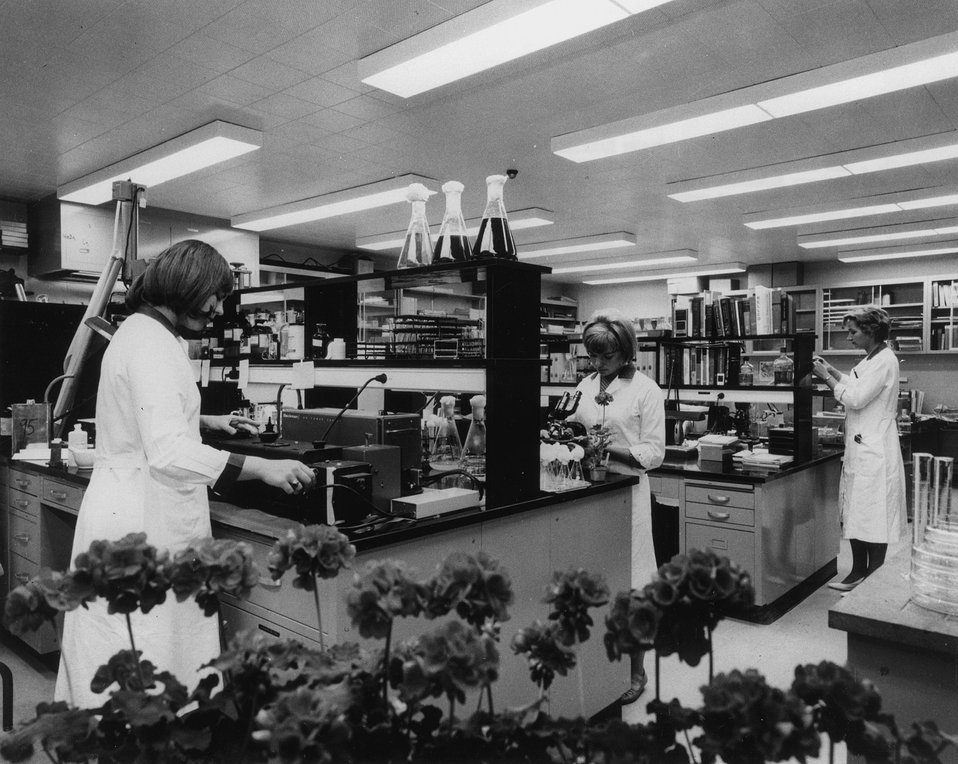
PLANT RADIOBIOLOGY STUDIES...In Brookhaven National Laboratory's plant radiobiology laboratory the effects of varying doses of radiation on plant materials are studied both on the macroscopic and microscopic scales. c. 1968